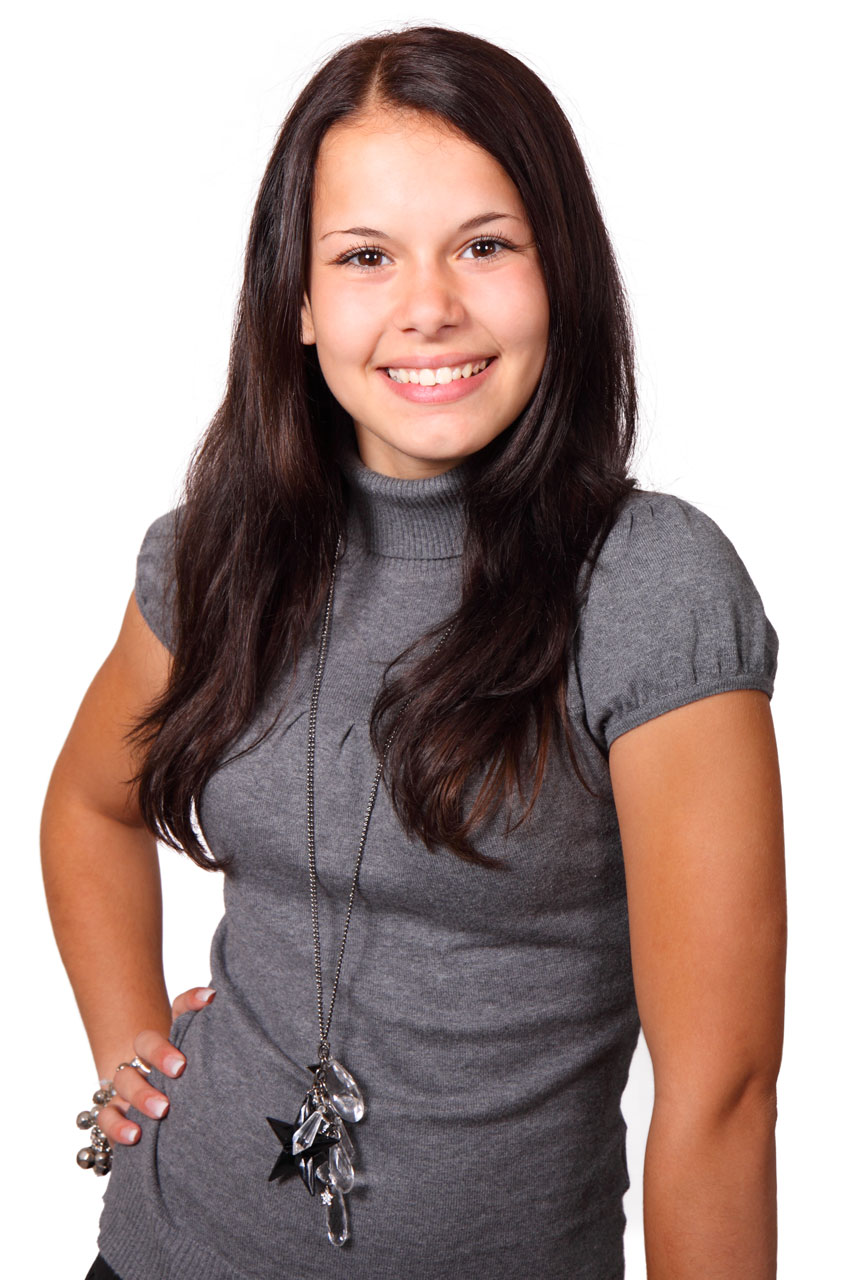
Brunette posing

Smiling brunette posing isolated on white background.